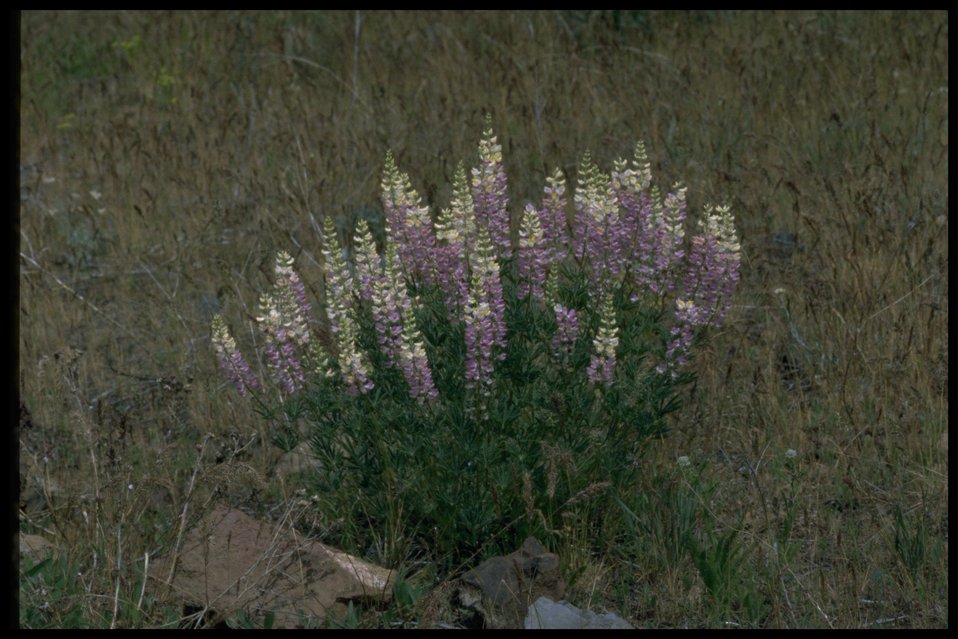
Farshot of Bigleaf Lupine - purple and white variant.